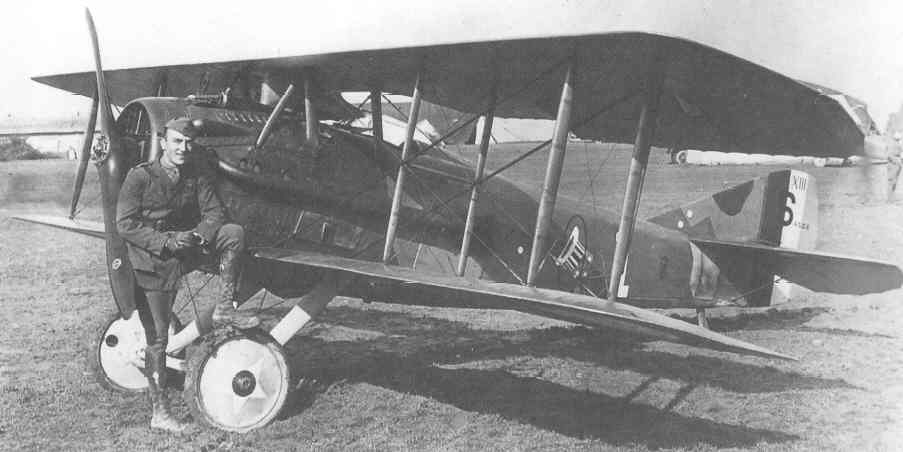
Captain Eddie Rickenbacker

EARLY YEARS -- Edward Vernon Rickenbacker was the American